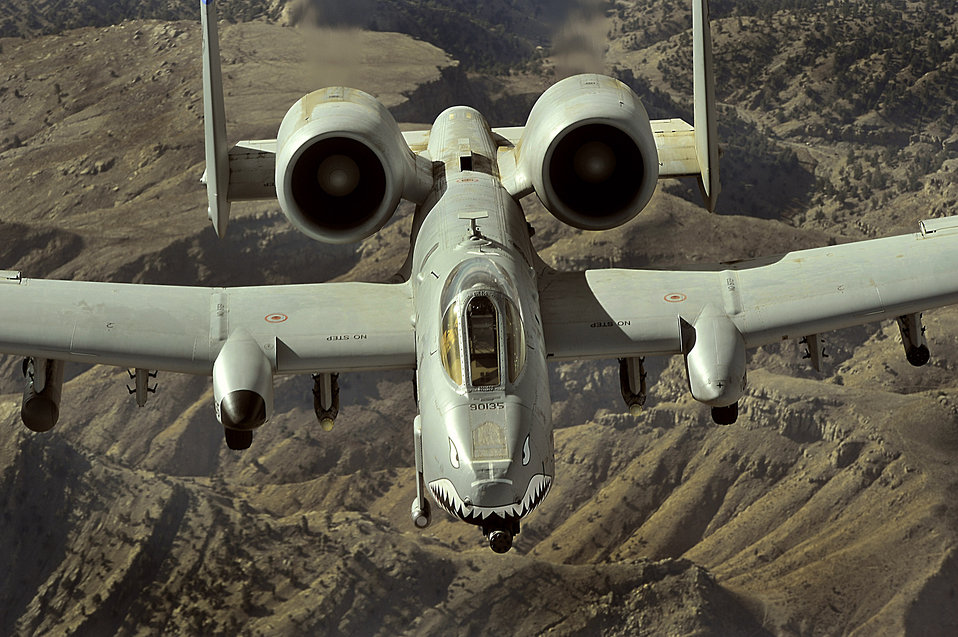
Flying high in the sky

An A-10 Thunderbolt II flies a close-air-support mission over Afghanistan on Nov. 7. The Thunderbolt II can employ a wide variety of conventional munitions, including general purpose bombs, cluster bomb units, laser guided bombs, joint direct attack munitions, wind corrected munitions dispenser or WCMD, AGM-65 Maverick and AIM-9 Sidewinder missiles, rockets, illumination flares, and the GAU-8/A 30mm cannon, capable of firing 3,900 rounds per minute to defeat a wide variety of targets including tanks.